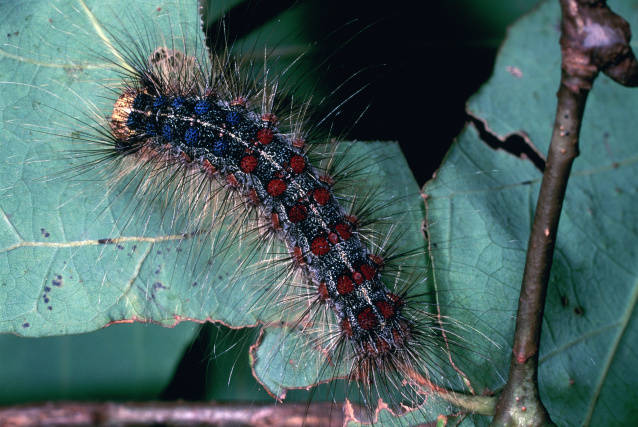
Gypsy moth caterpillar

Photo credit: USFWS/James Appleby

Climate change can shift the range of invasive species, serve as the trigger by which non-native species do become invasive, and introduce and spread invasive species through severe weather events such as storms and floods.